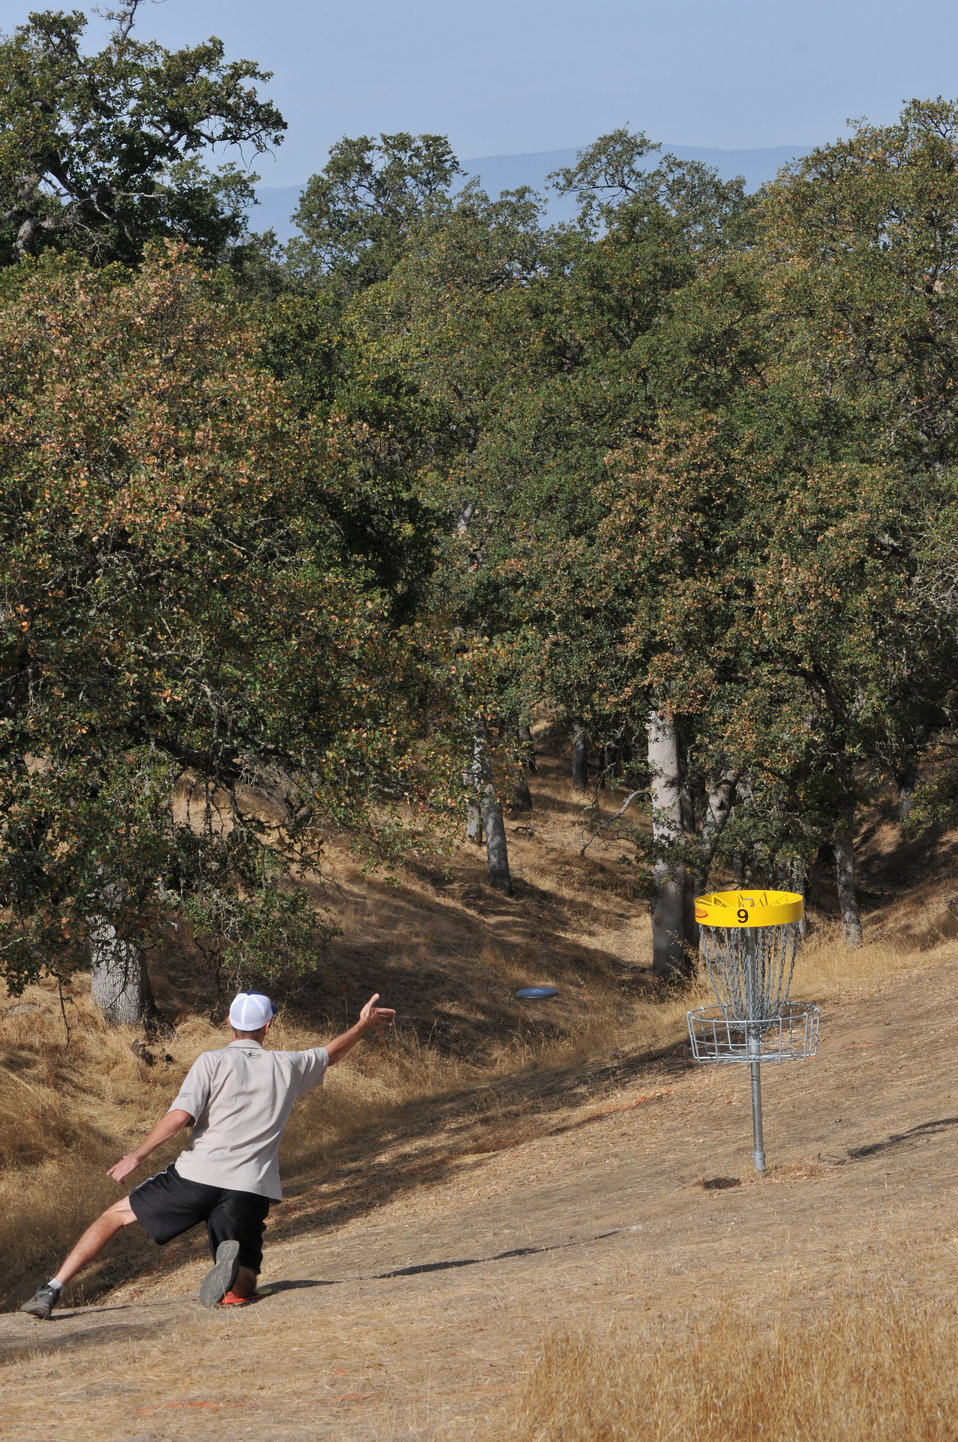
BLACK BUTTE LAKE, Calif. (Oct. 18, 2010) -- A disc golfer putts during the Professional Disc Golf Association's Norcal Series Championships here Oct. 16. The U.S. Army Corps of Engineers Sacramento District’s Black Butte hosted the tournament Oct. 15-17 at its new disc golf course, built on park lands by The Orland Aces disc golf club under a partnership with the Corps. More than 150 disc golfers from as far as Texas competed in the tournament.